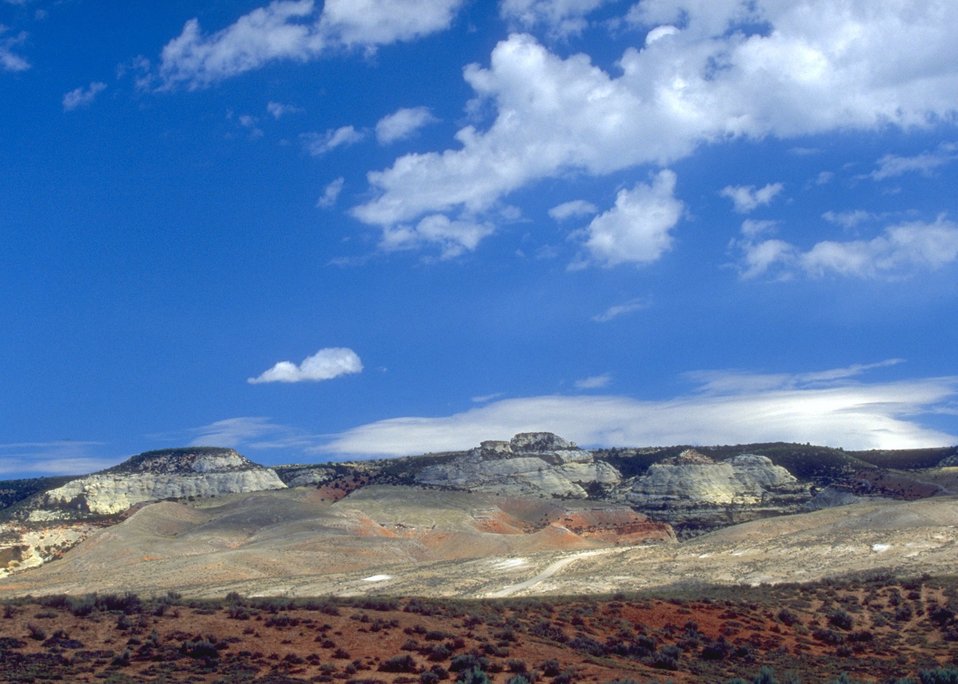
View along the Red Gulch/Alkali Back Country Byway, Worland Field Office.